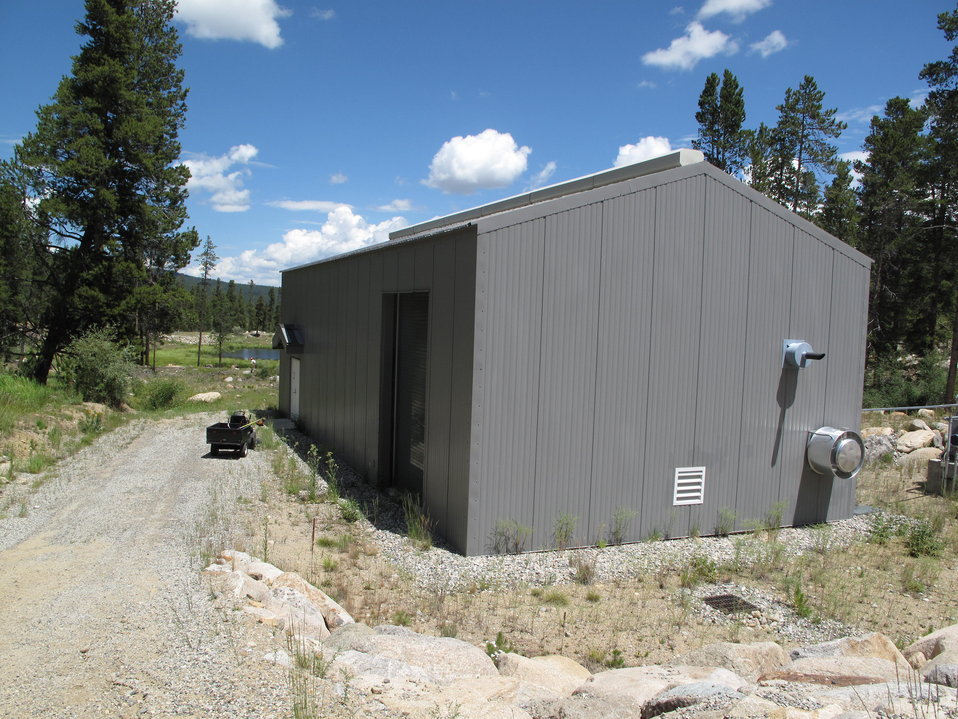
Leadville National Fish Hatchery

Clean water is important for healthy fish. This building is were all the raceway and pond water is filtered.